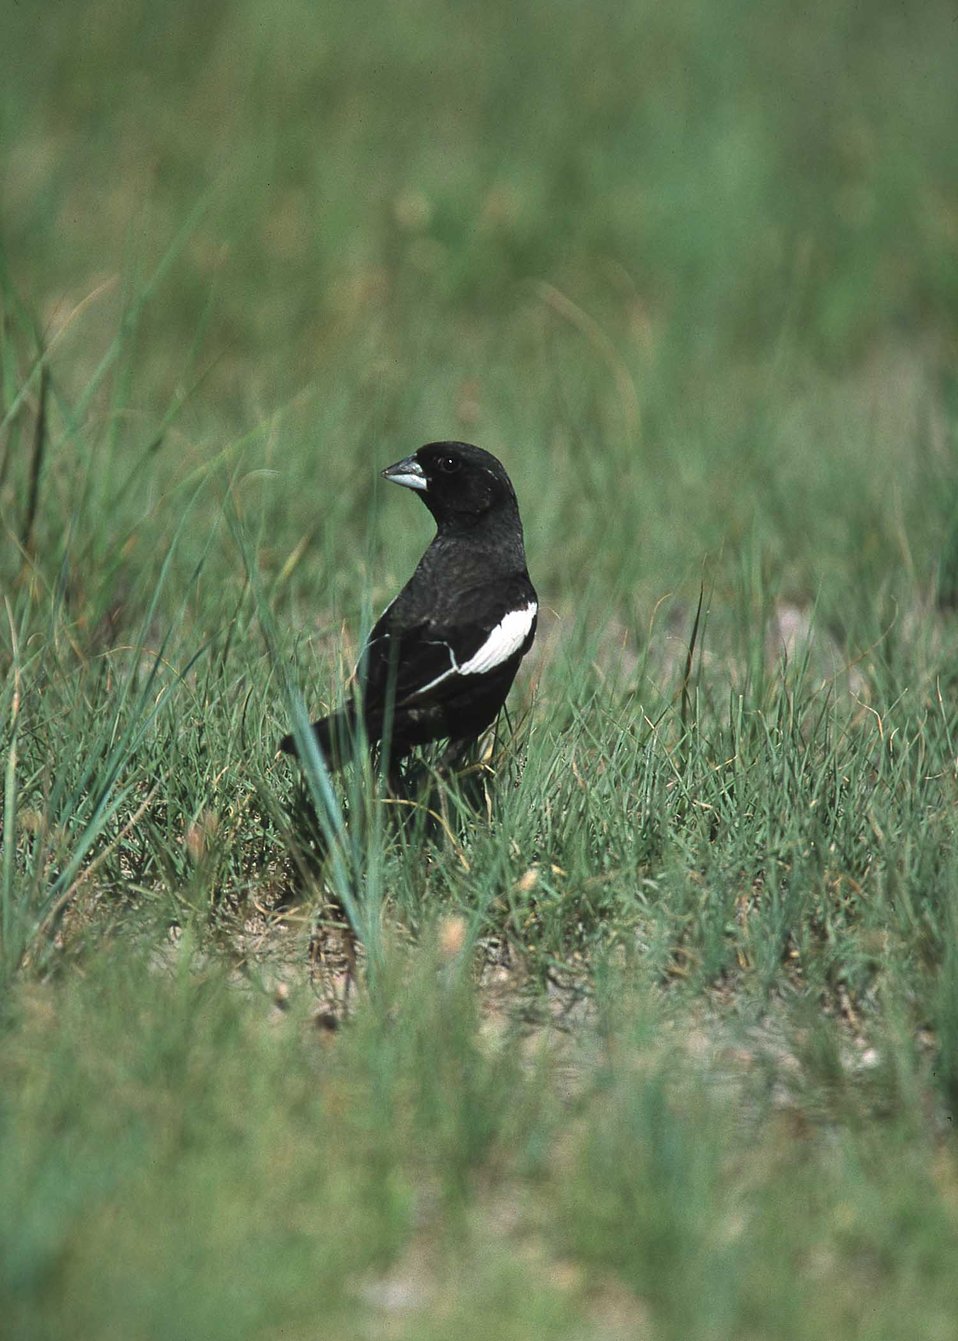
Lark Bunting, Pawnee National Grassland, CO.